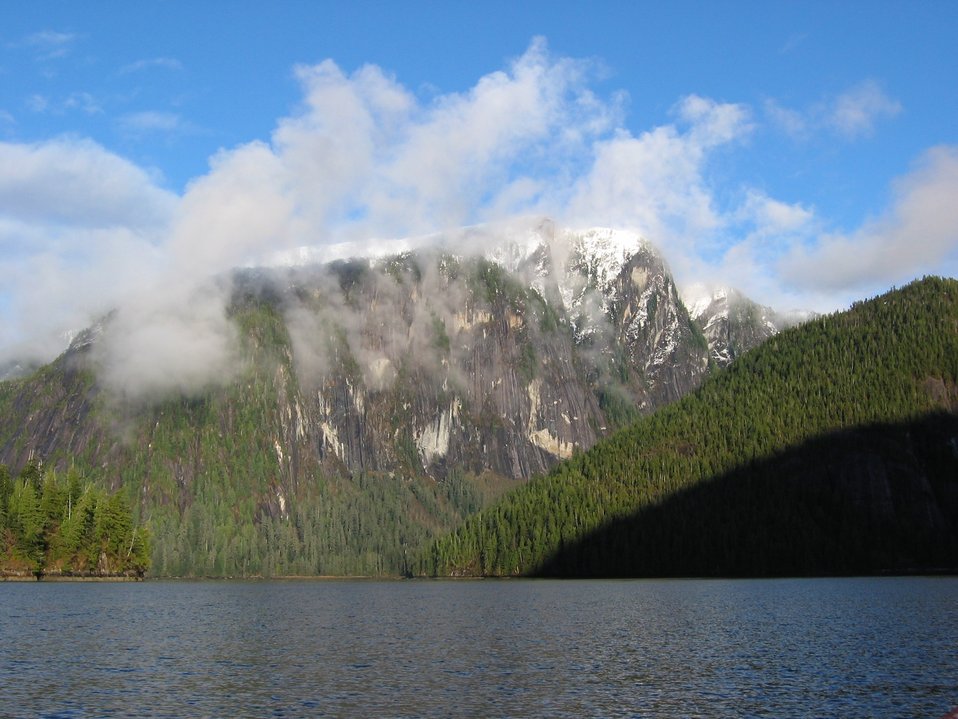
A maritime Yosemite in Rudyerd Bay.